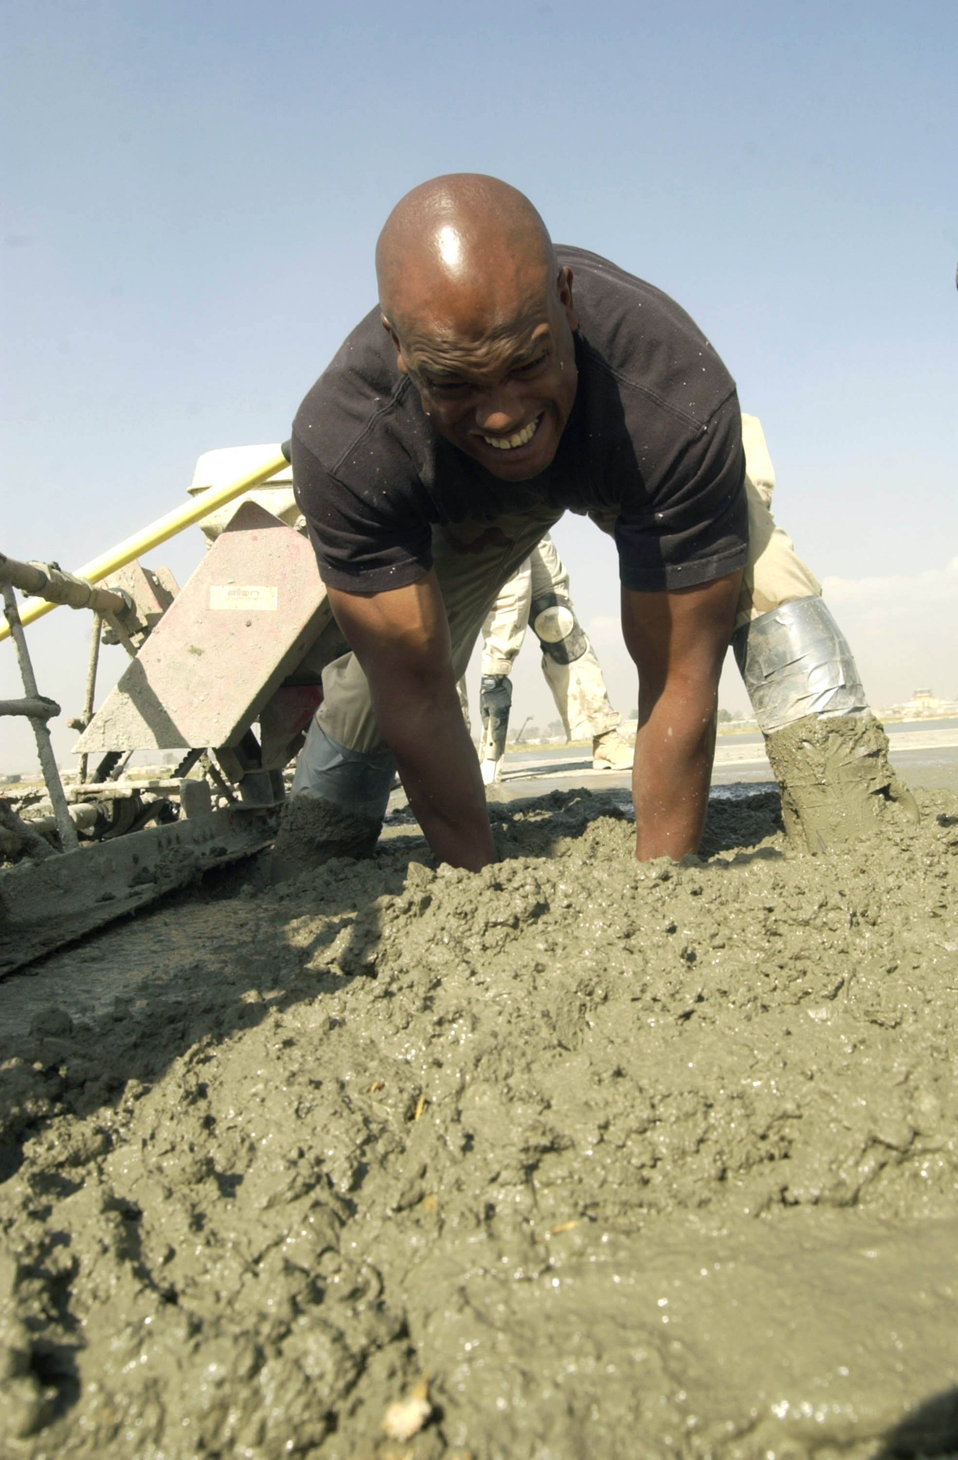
Paving the runway

BAGRAM AIR BASE, Afghanistan -- Tech. Sgt. Wesley Matthews, of the 455th Expeditionary Support Squadron, adjusts a plywood board underneath wet concrete that will serve as an expansion joint for a pad on the new runway here.